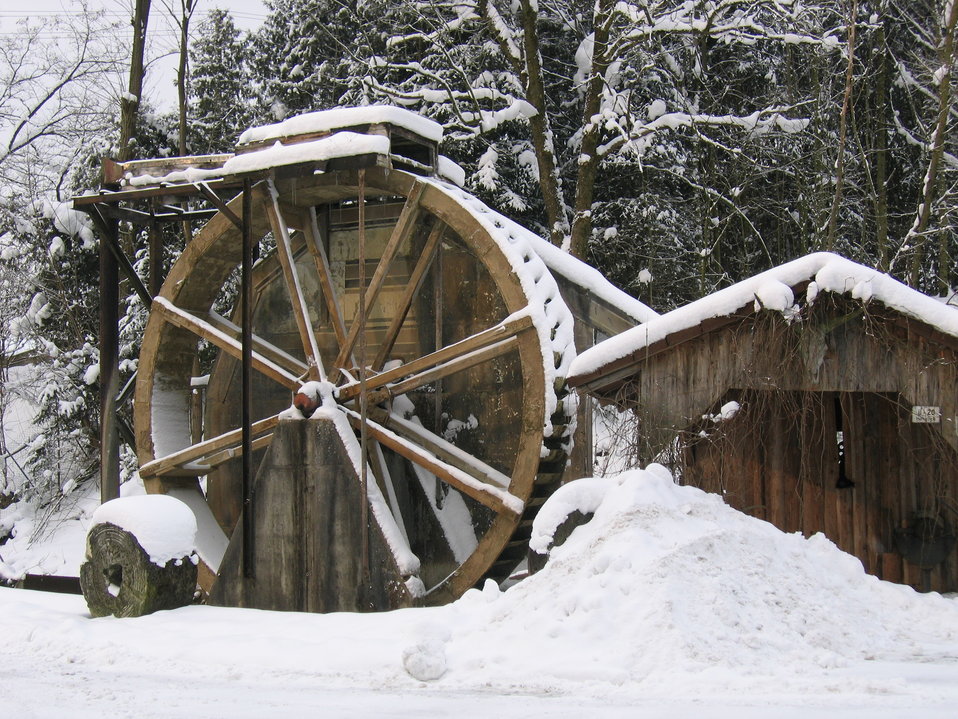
Deutsch: Deutschland - Baden-Württemberg - Landkreis Ravensburg - Bergatreute: Löffelmühle